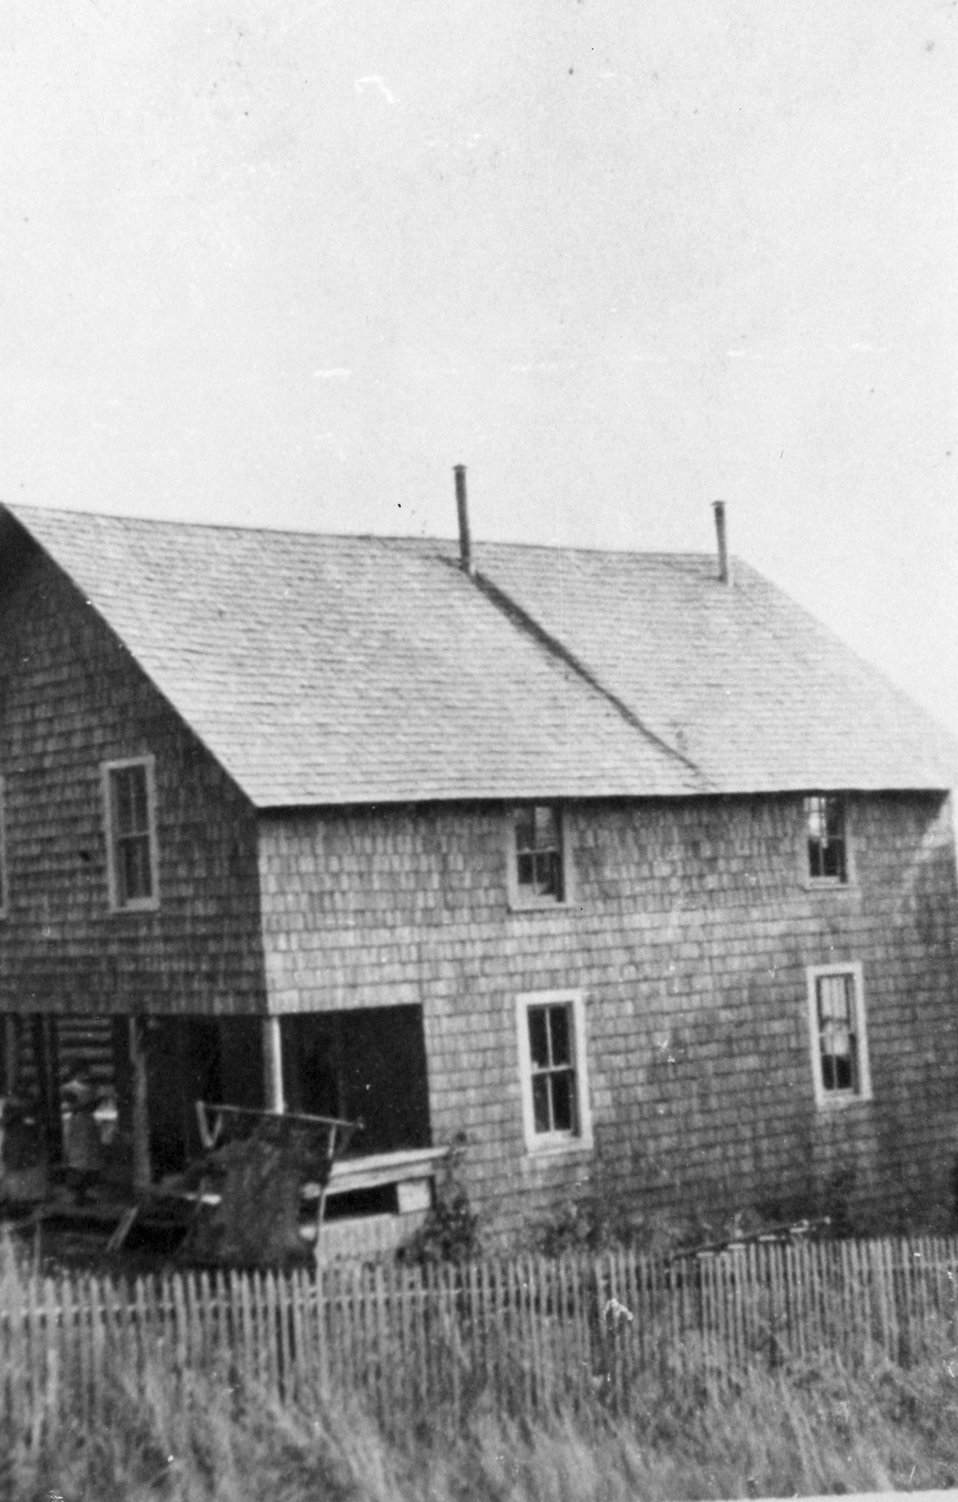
John and Adeline Billing's ome at Big Meadows.